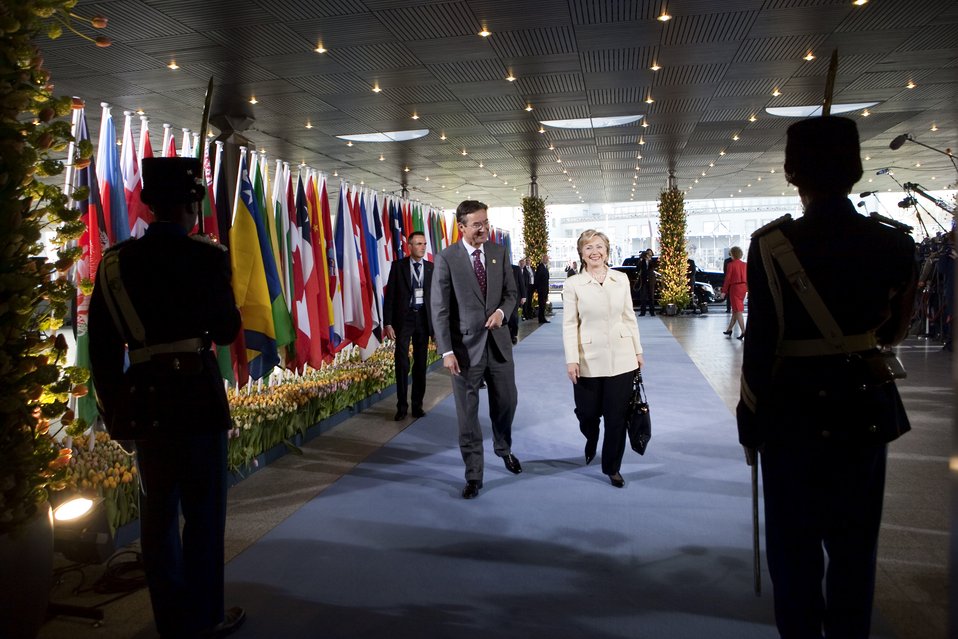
Secretary Clinton Arrives at The Hague

Dutch Minister of Foreign Affairs Maxime Verhagen welcomes U.S. Secretary of State Hillary Rodham Clinton as she arrives at the World Forum Convention Centre in The Hague during the International Conference on Afghanistan March 31, 2009. Over 90 countries joined this conference.